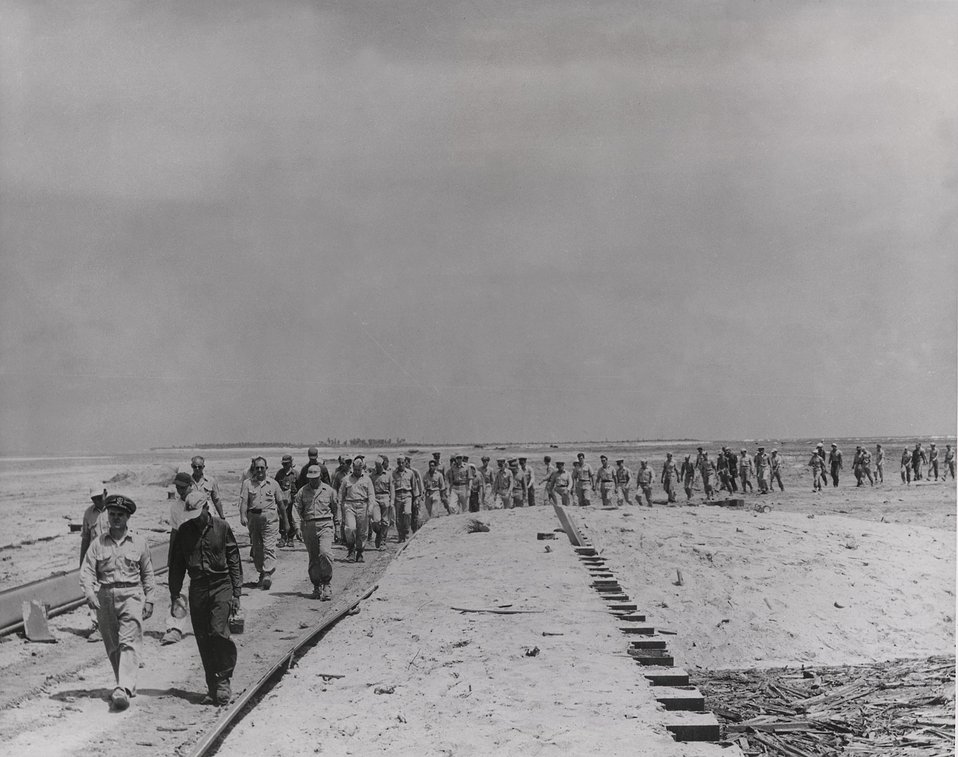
Scientists check the condition of Bikini after nuclear tests.April and May 1948...An inspection party on one of the islands at Eniwetok views the devastation caused by the blast of an atomic bomb.